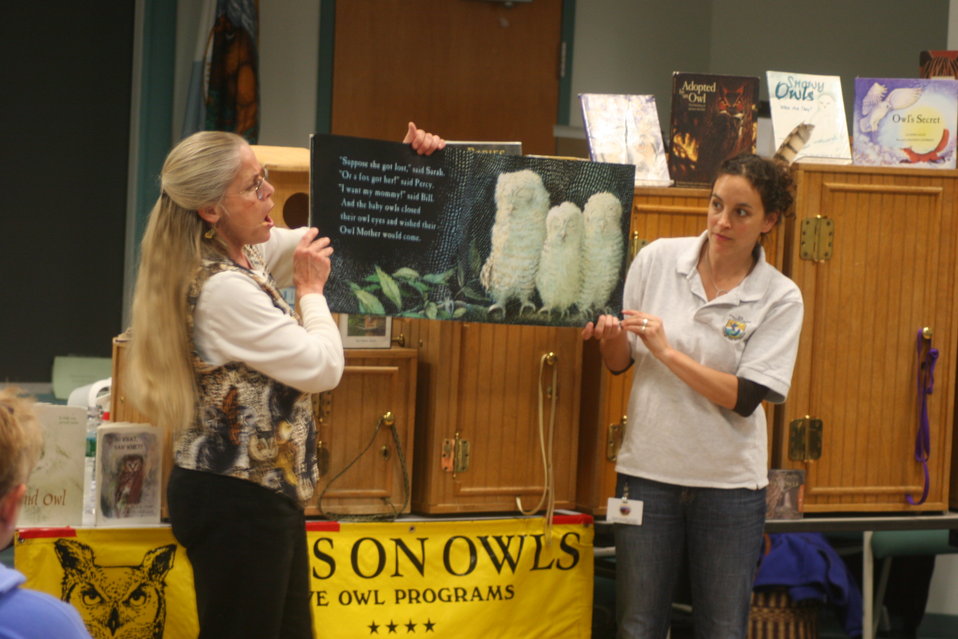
Poster of Snowy Owls

Live bird demonstration